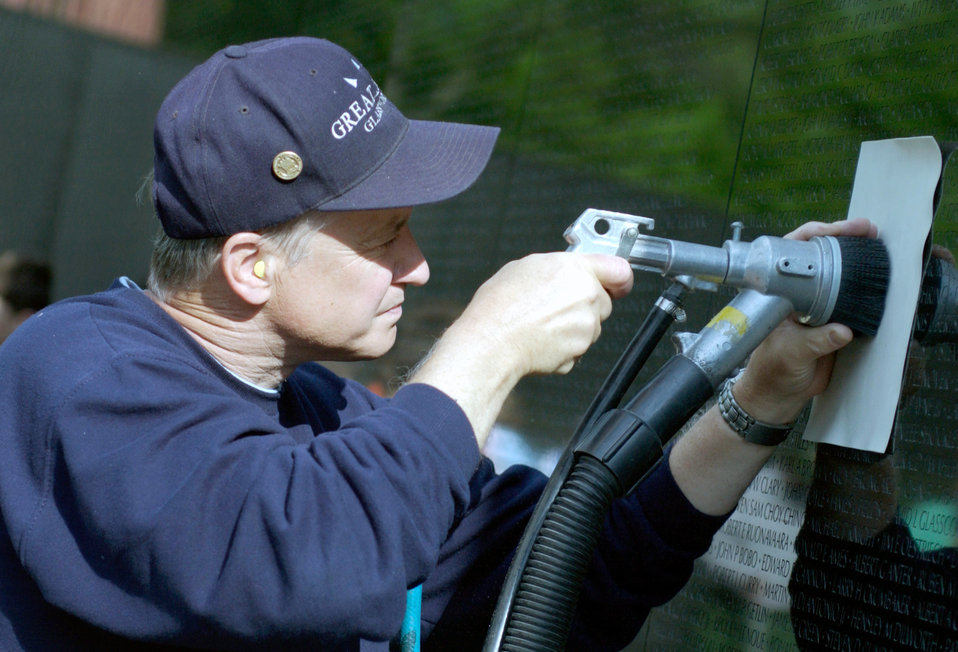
Thw wall

WASHINGTON -- Jim Lee updates the status of Col. Robert Allen Govan on the Vietnam Veteran's Memorial here May 13. Govan's status changed from missing to killed in action. Lee is president of Great Panes Glassworks Inc. in Denver and was hired by Vietnam Veterans Memorial Fund officials to update the black granite monument.